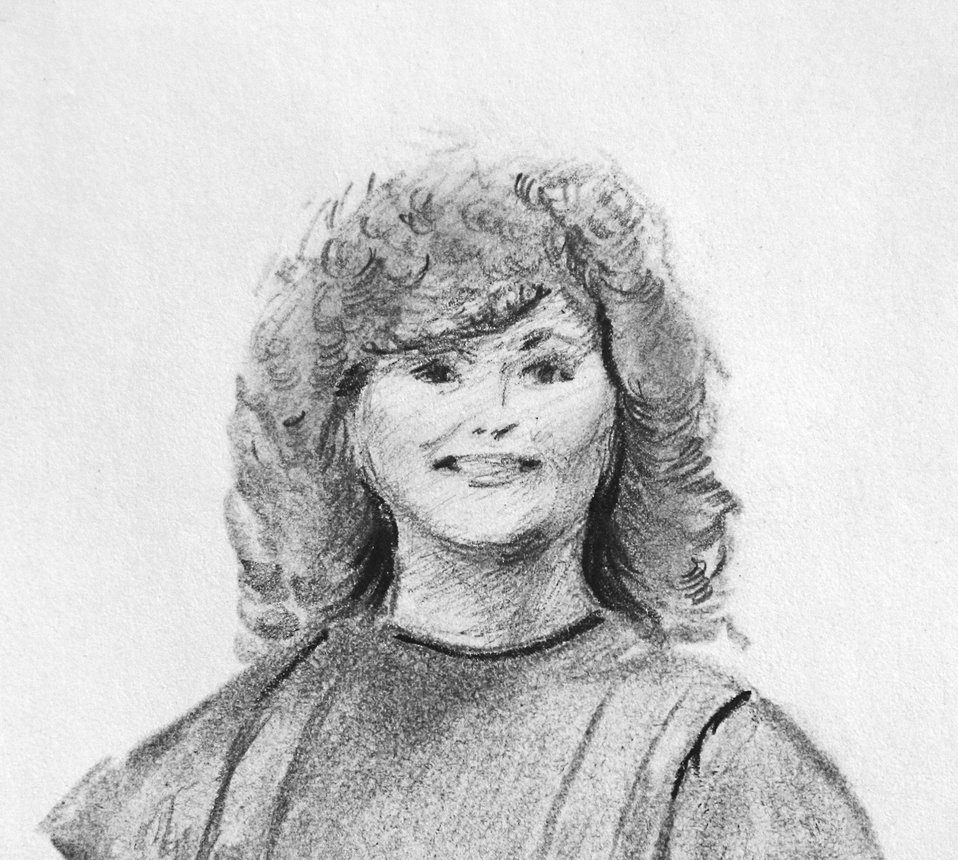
Character artwork by Sarah LeCompte for Nancy Harms's "From Spinning Wheels to Wagon Wheels".